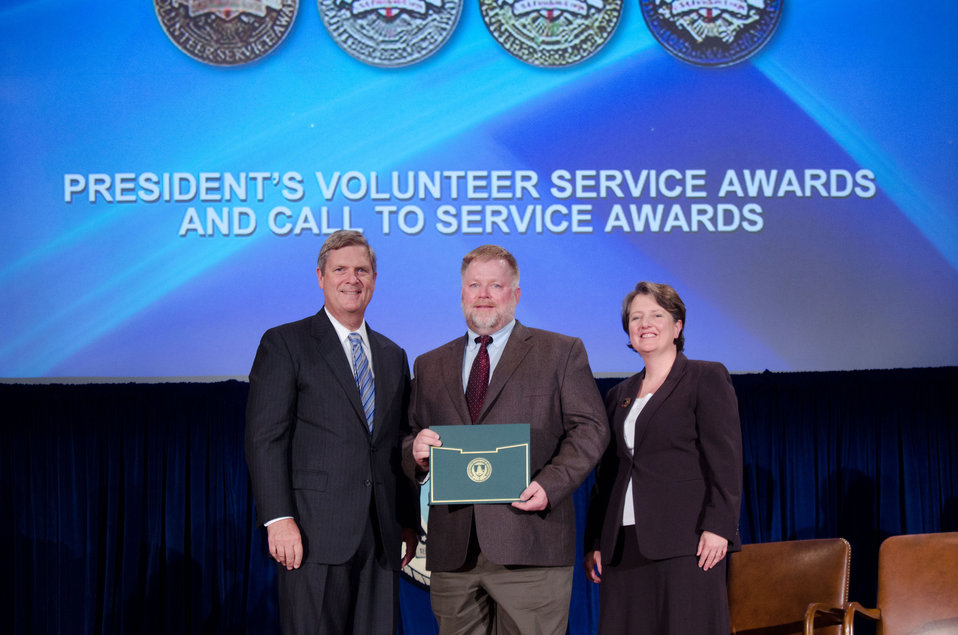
Agriculture Secretary Tom Vilsack (l) and Deputy Secretary Kathleen Merrigan (r), presents the President’s Volunteer Service Awards and Call to Service Award to Joe Wells, Animal and Plant Inspection Service. On Wednesday, September 14, 2011 in the Jefferson Auditorium at the US Department of Agriculture in Washington, DC.